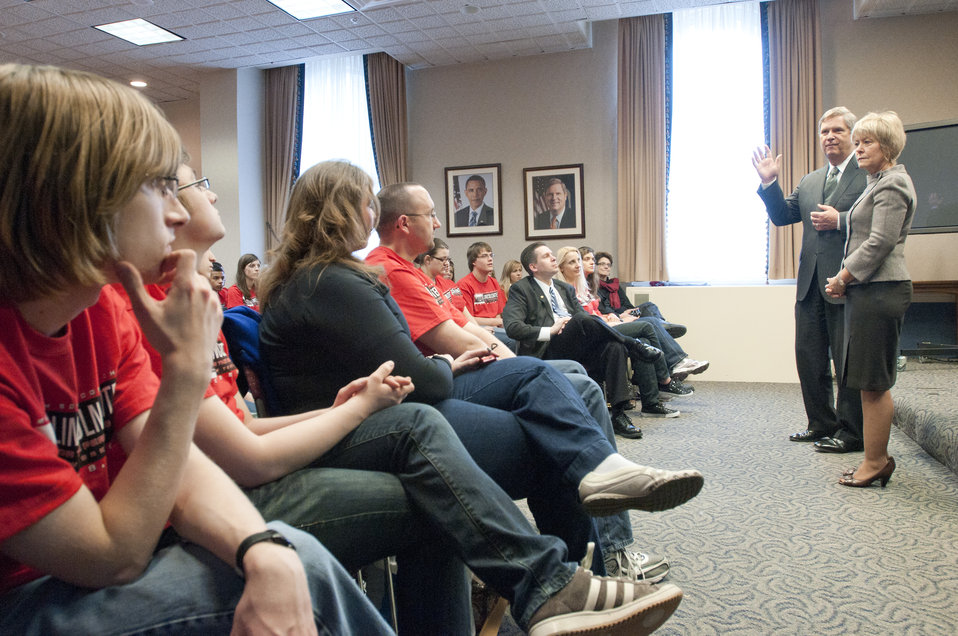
U.S. Department of Agriculture (USDA) Secretary Tom Vilsack and his wife Christie meet with more than 90 students that came from Mason City High School, Mason City, Iowa to the USDA headquarters in Washington, D.C. on March 25, 2011. Secretary Vilsack talked about the mission of the USDA, the many places around the world that the USDA supports, as well as mentioning some noted Iowans in government and agriculture history. The Vilsacks answered several questions from the students, from “What is your day like,” to “What are the major problems USDA faces?”